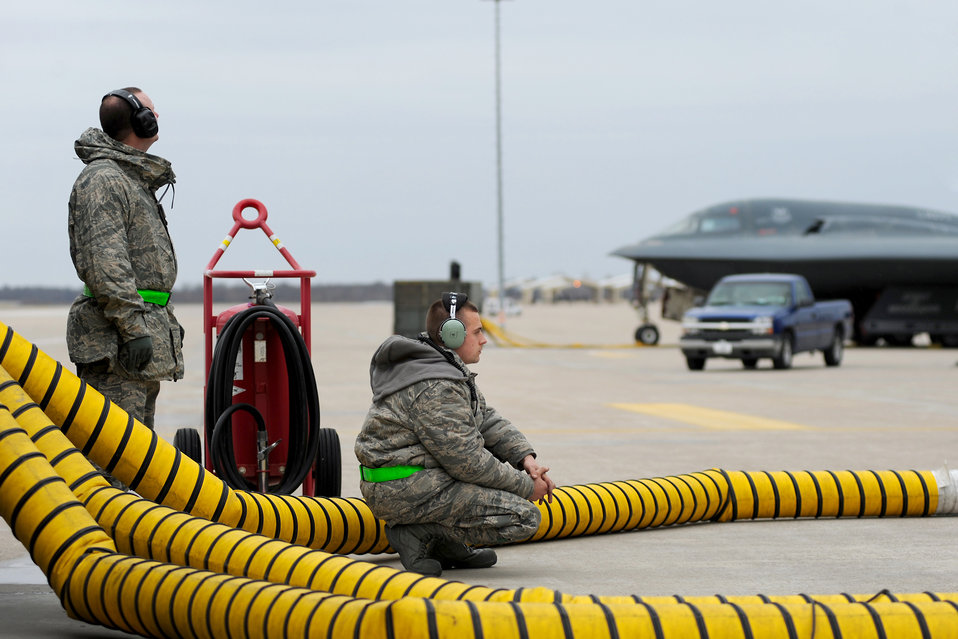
B-2 crews prepare for mission

Maintainers and crew chiefs from the 509th Aircraft Maintenance Squadron at Whiteman Air Force Base, Mo., prepare B-2 Spirits March 19, 2011, for Operation Odyssey Dawn.